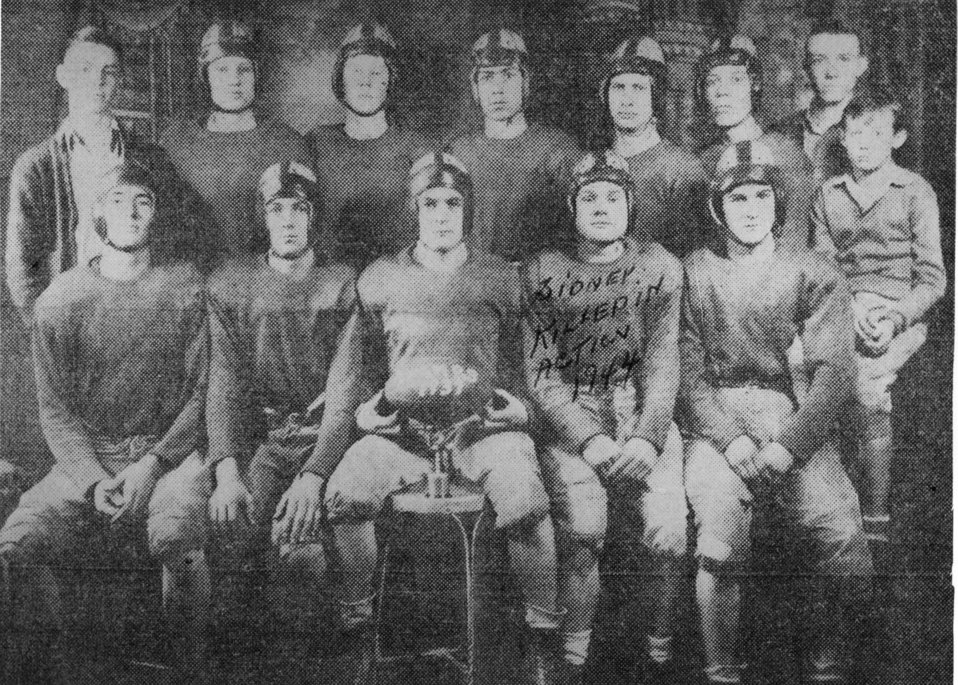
Early settlers at Oak Ridge